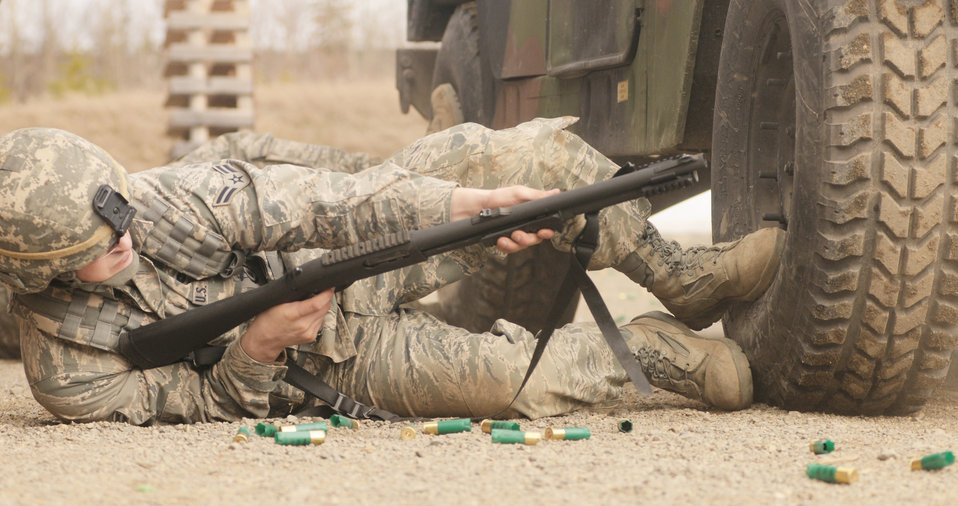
Staying low

During Vigilant Guard, Airman First Class Matthew Taylor fires his shotgun from a defensive position on the small-weapons range April 28, 2010, at Fort Richardson, Alaska. Airman Taylor is assigned to the Oregon Air National Guard's 173rd Security Forces Squadron.